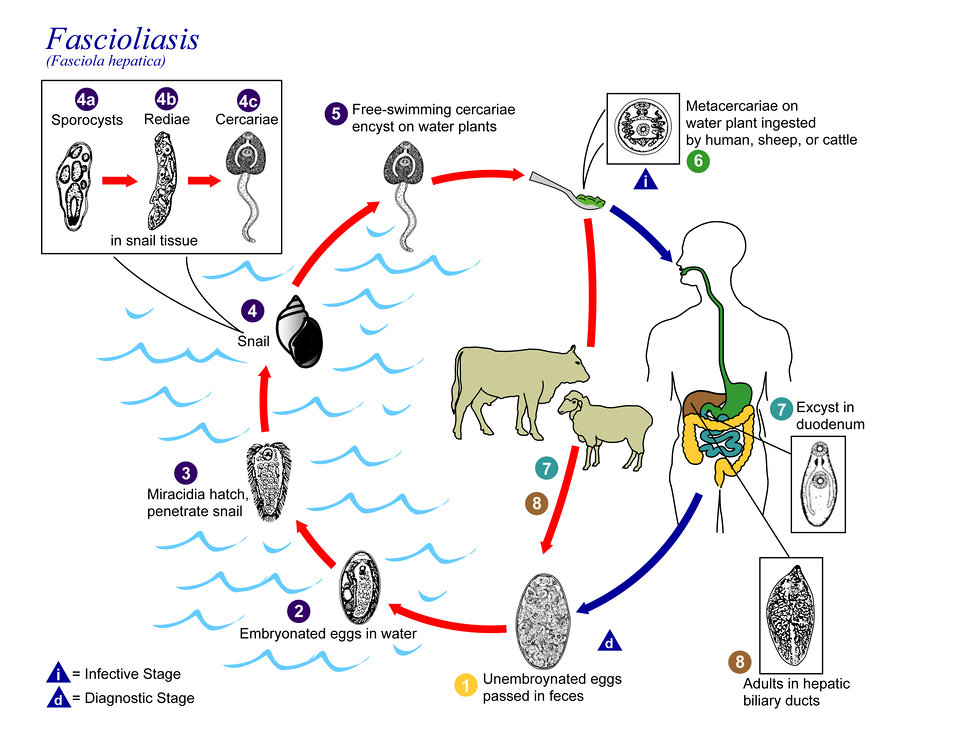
This is an illustration of the life cycle of the causal agents of Fascioliasis.